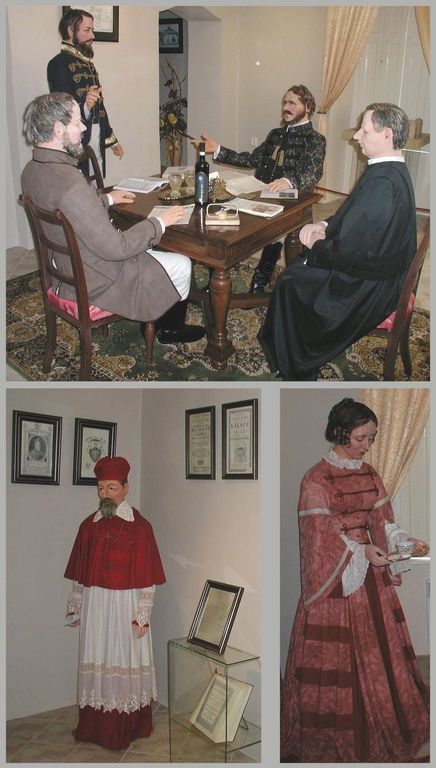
Pamätné izby Licencovanie: Autorom fotografie je Imrich Šimonek z Dubníka sk:Category:Dubník sk:Kategória:Presunúť na Commons